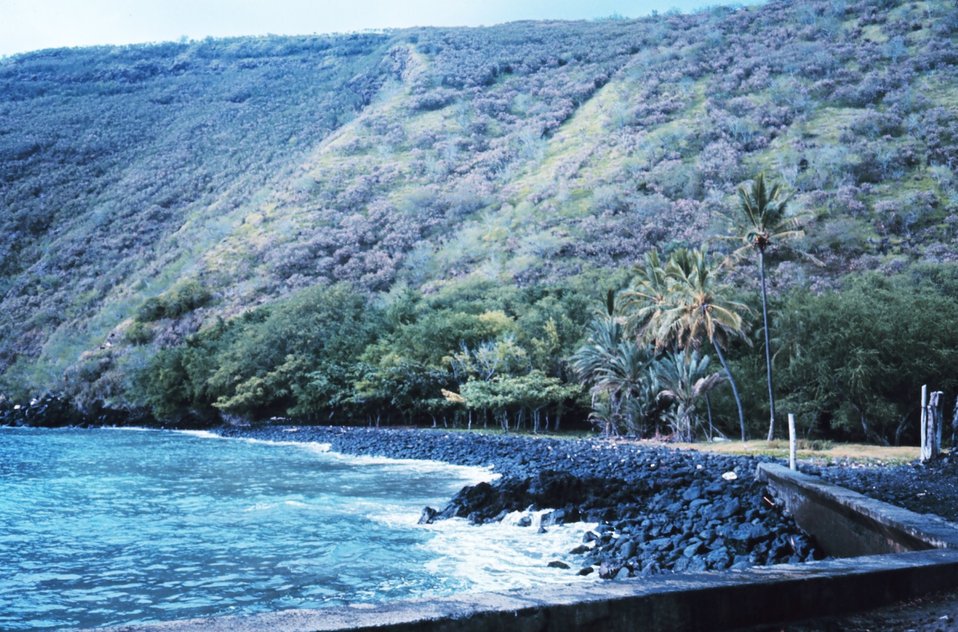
Hawaiian shoreline